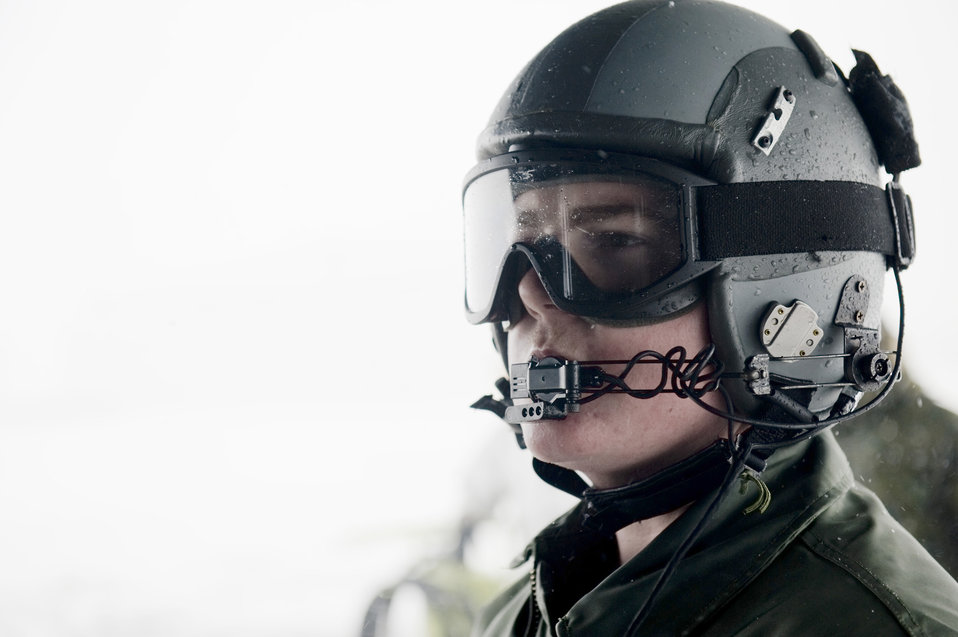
Forward area refueling point

Airman 1st Class JT Mills communicates with pilots and forward area refueling point team members while defueling an MC-130P Combat Shadow March 17, 2011, at Yamagata Airport, Japan. Airman Mills is a loadmaster assigned to the 353rd Special Operations Group.